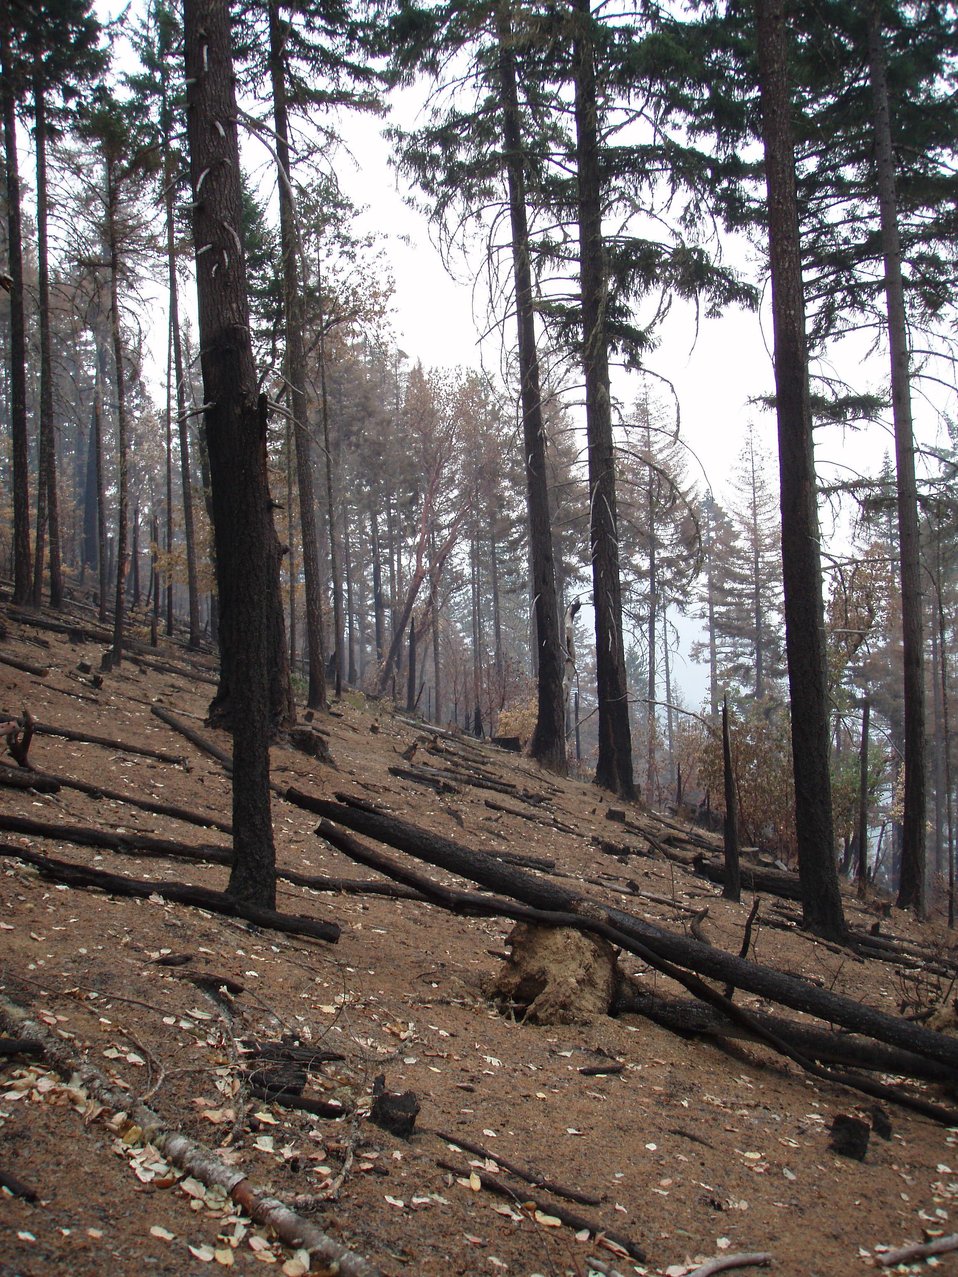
The burned and charred remains of forestland at the Brimstone Fire in Oregon. The Brimstone Fire near Merton, OR began on Jul. 26, 2013 began by lightning consumed 2,372 acres and is 100% contained.